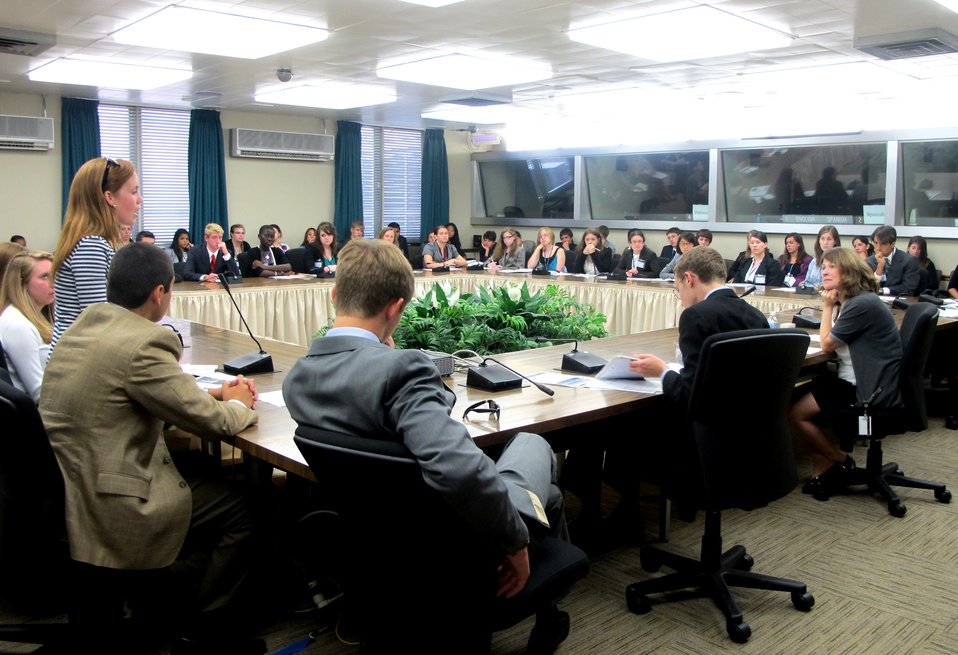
Policy Advisor Efron Takes Questions From Students

Senior Policy Advisor for Democracy, Human Rights and Labor Sonni Efron, far right, takes questions from a group of 83 students visiting the U.S. Department of State in Washington, D.C., on July 19, 2011. The students are part of the National Student Leadership Conference, a nonprofit, nonpartisan organization that helps students explore career interests.